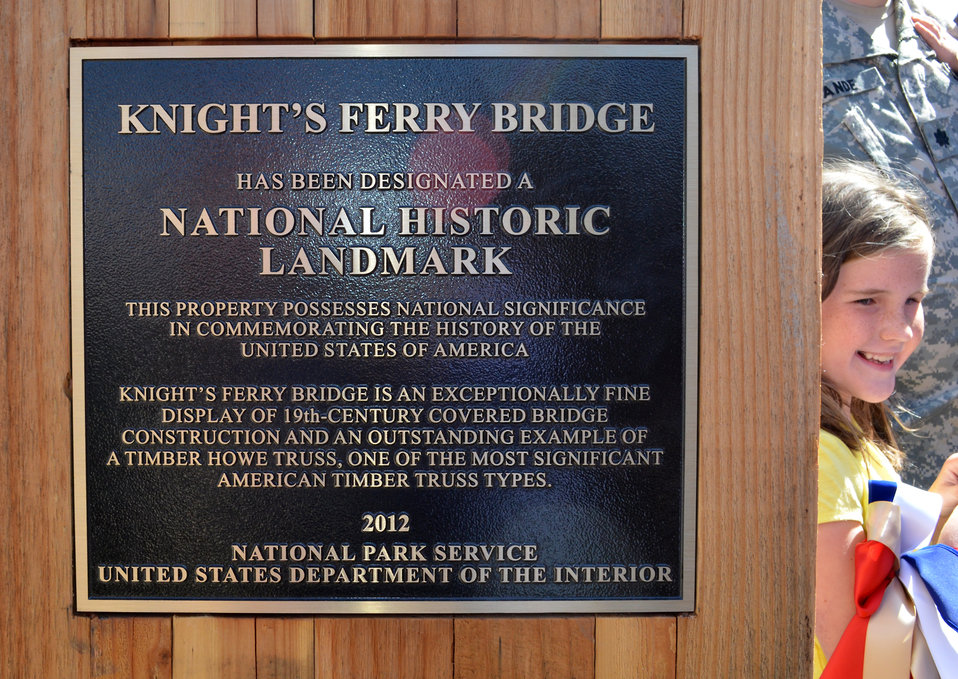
Historic weekend in Knights Ferry

Violet Tande, daughter of Lt. Col. Chris Tande, a contacting team leader with the U.S. Army Corps of Engineers Sacramento District, helps unveil the National Historic Landmark plaque for the Knights Ferry covered bridge at the Corps’ Stanislaus River Parks in Knights Ferry, Calif., March 22, 2014.